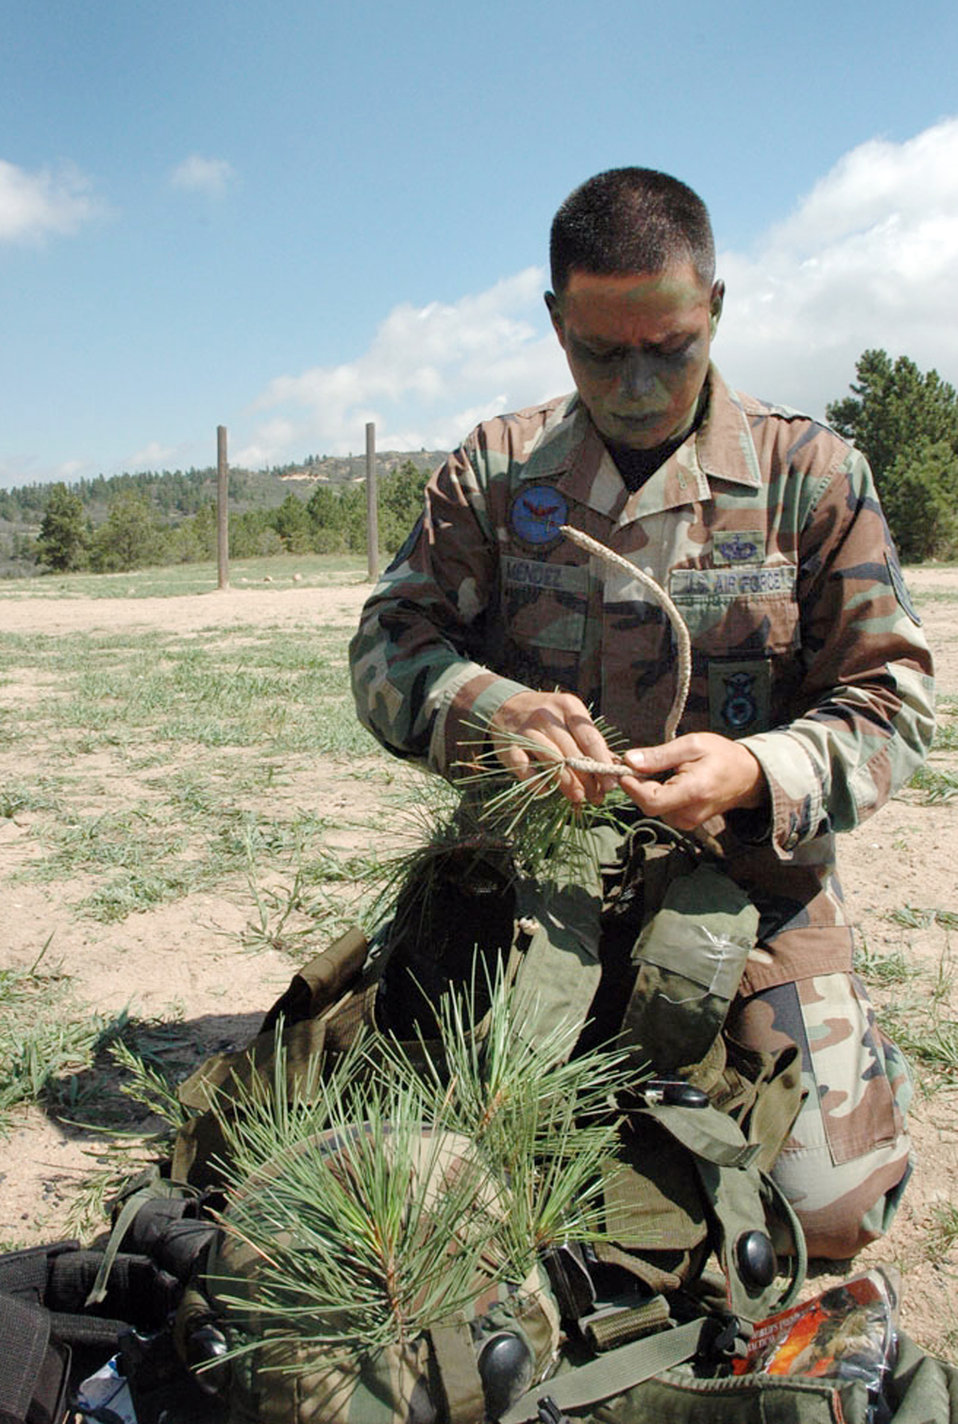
Challenge continues for security forces

Staff Sgt. Javier Mendez places tree branches in his helmet and gear to improve his concealment at the Air Force Space Command Guardian Challenge tactics competition in Colorado on Aug. 14. Sergeant Mendez is with the 30th Security Forces Squadron at Vandenberg Air Force Base, Calif.